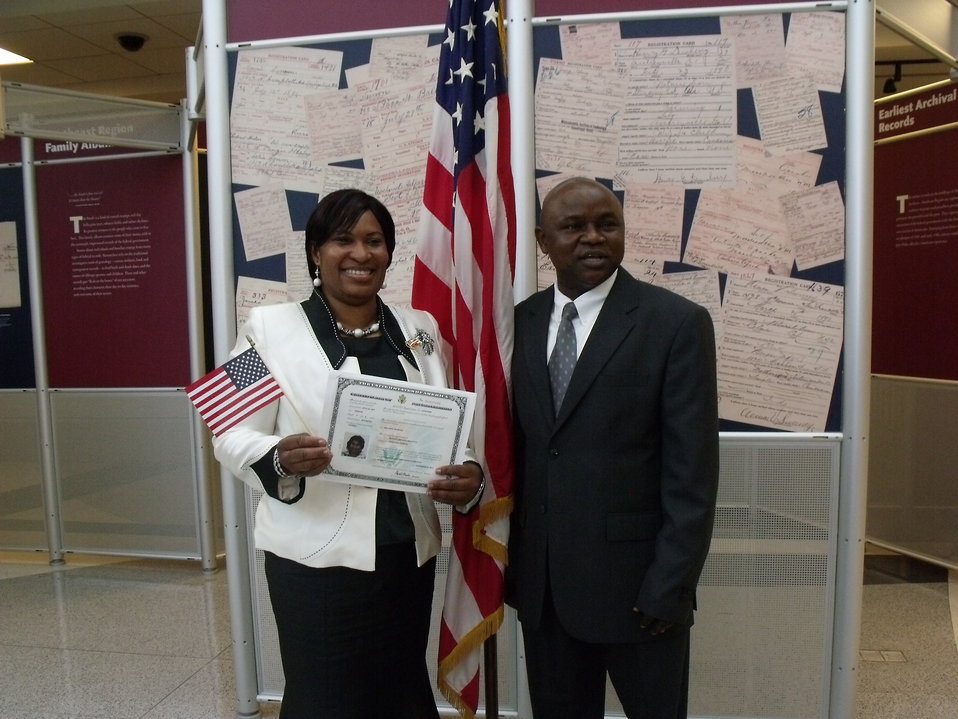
New Citizens